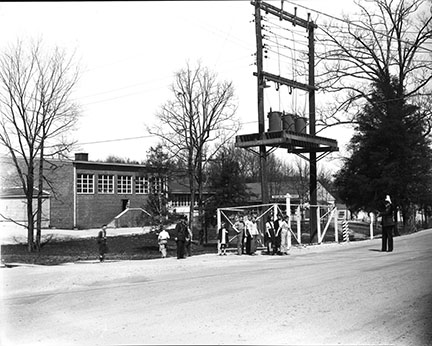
Schools at Oak Ridge